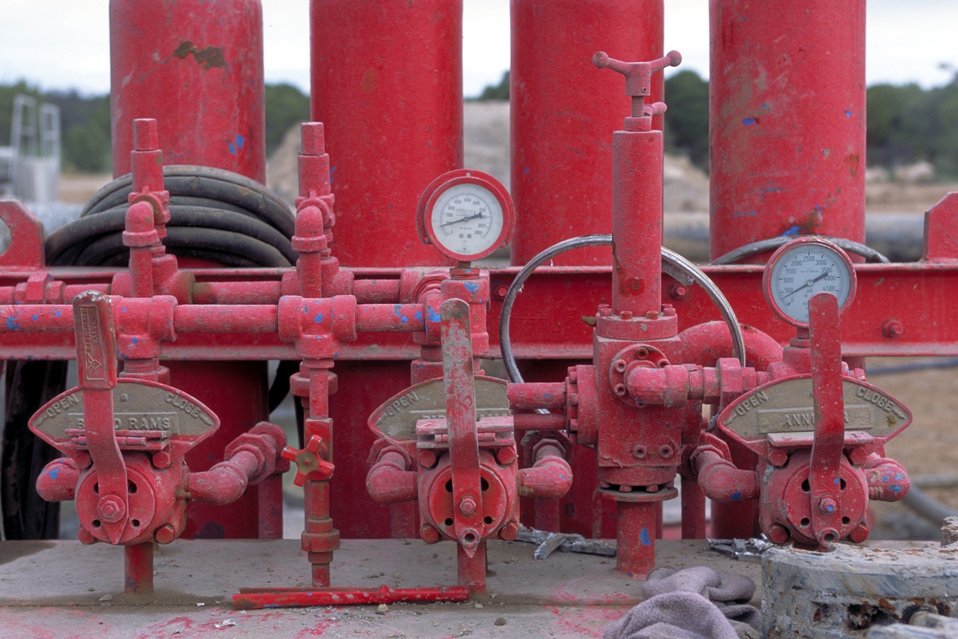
Drilling for coal bed methane near Price, Utah.